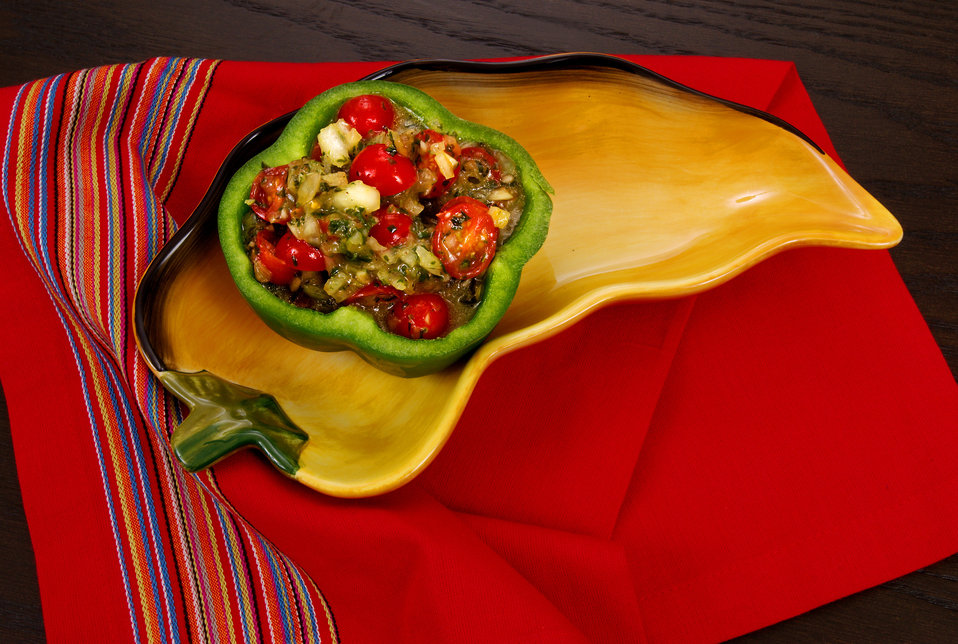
This image depicts a serving of a Vegetarian Stuffed Pepper, which based on its ingredients, is a very healthy choice as a meal, side dish or snack.